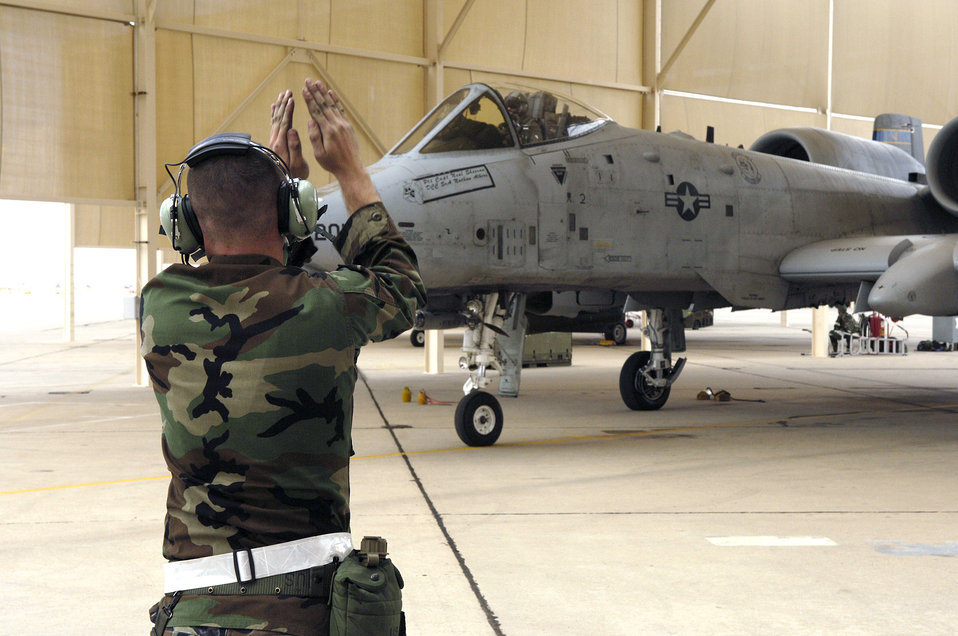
Preparing to takeoff

Airman 1st Class Chad Goucher marshals Maj. Vernie Pendley as he takes off during exercise Bushwhacker 06-02 at Davis-Monthan Air Force Base, Ariz., on Wednesday, April 05, 2006. Bushwhacker 06-02 is a Phase I and Phase II exercise demonstrating the 355th Wing's ability to prepare to deploy and fight when called. Airman Goucher is with the 355th Aircraft Maintenance Squadron, and Major Pendley is with the 354th Fighter Squadron.